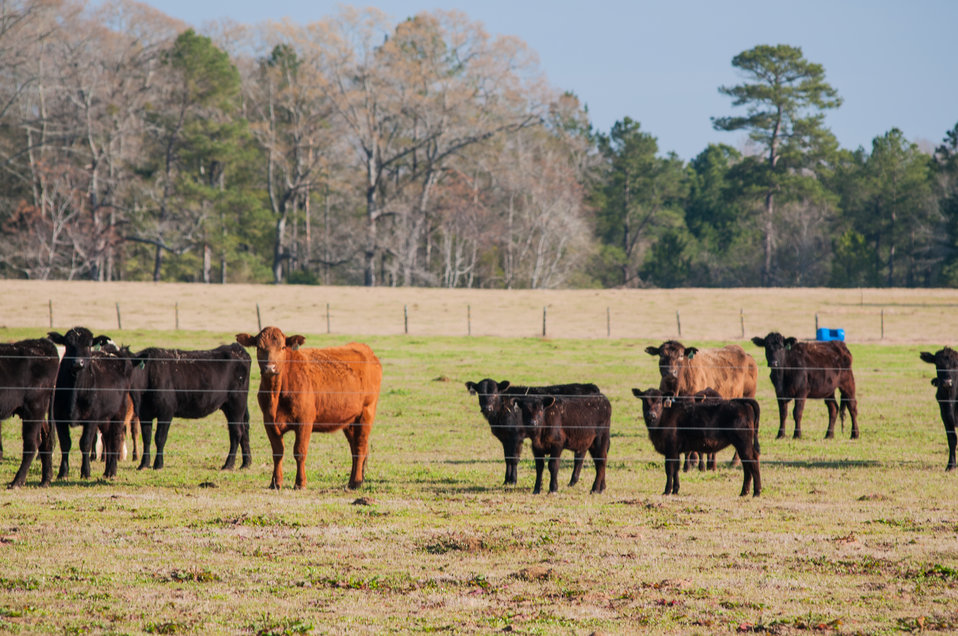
Cattle graze in a pasture on Banamacc Farms in Edison, Calhoun County, GA on Mar. 7, 2013. Banamacc Farms owner Raul Moreno installed concrete pads heavy around a use area around a watering trough. Moreno’s conservation plan calls for cross fencing and concrete pads around watering troughs. Moreno was able to secure funding for the improvements with a USDA NRCS Environmental Quality Incentive Program (EQIP) contract. Moreno mentioned, “NRCS provided me with specifications and designs that assisted me in installing conservation practices that will last for many years to come.” The USDA Strike Force Initiative has designated Calhoun County, GA as a Strike Force county selected to receive assistance to relieve persistent poverty in historically high-poverty counties.